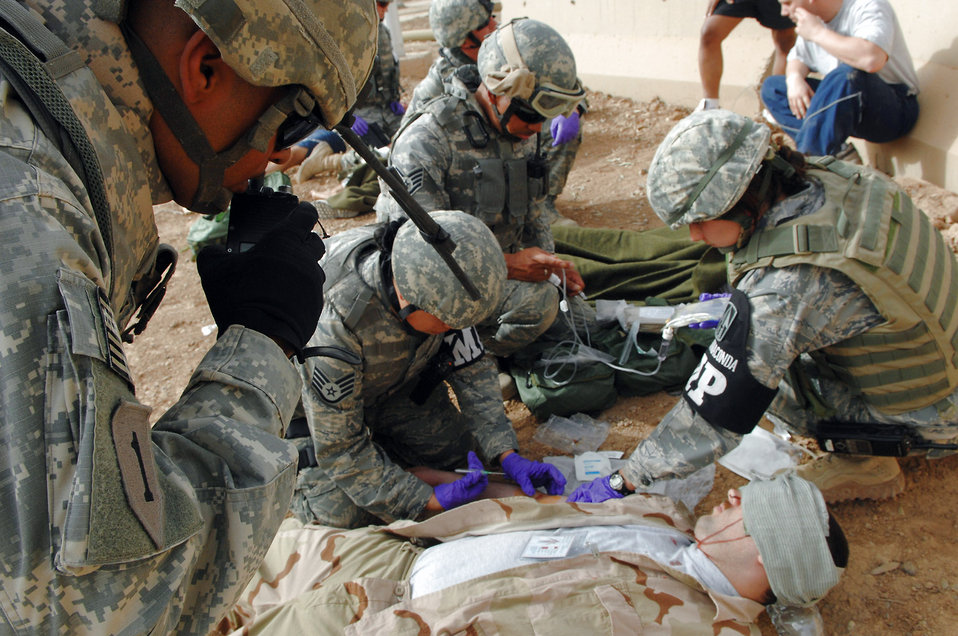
Wost case scenario

Army Sgt. 1st Class Andrew Ali Bocas calls in an updated casualty report to the Joint Emergency Operations Center during a mass casualty battle drill March 31 at Balad Air Base, Iraq. The battle drill tested the ability of Air Force and Army to work side-by-side during an emergency situation. Sergeant Bocas is assigned to the 557th Maintenance Company.